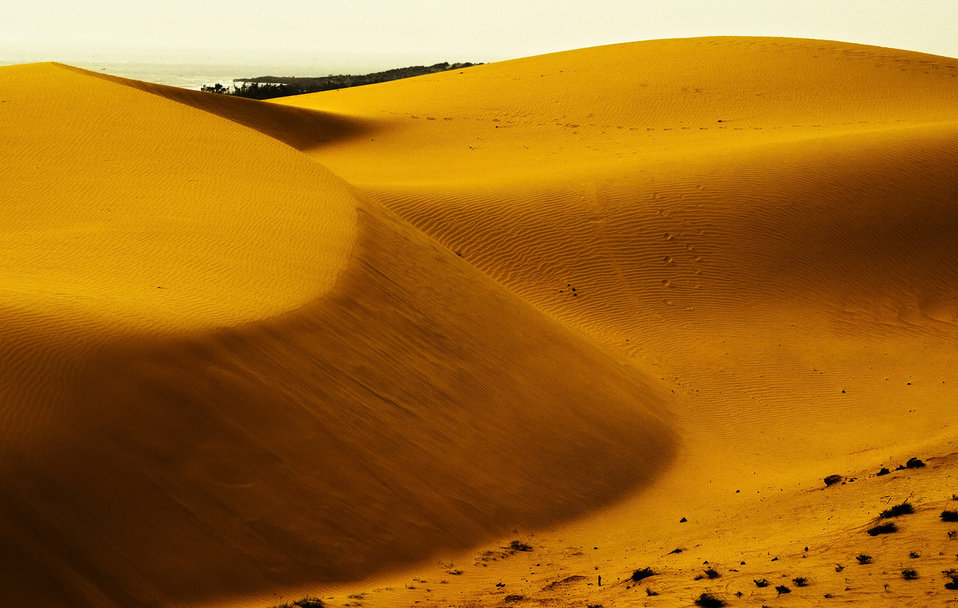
Mui ne sand dunes #5

Sand dunes of mui ne, phan thiet, vietnam..